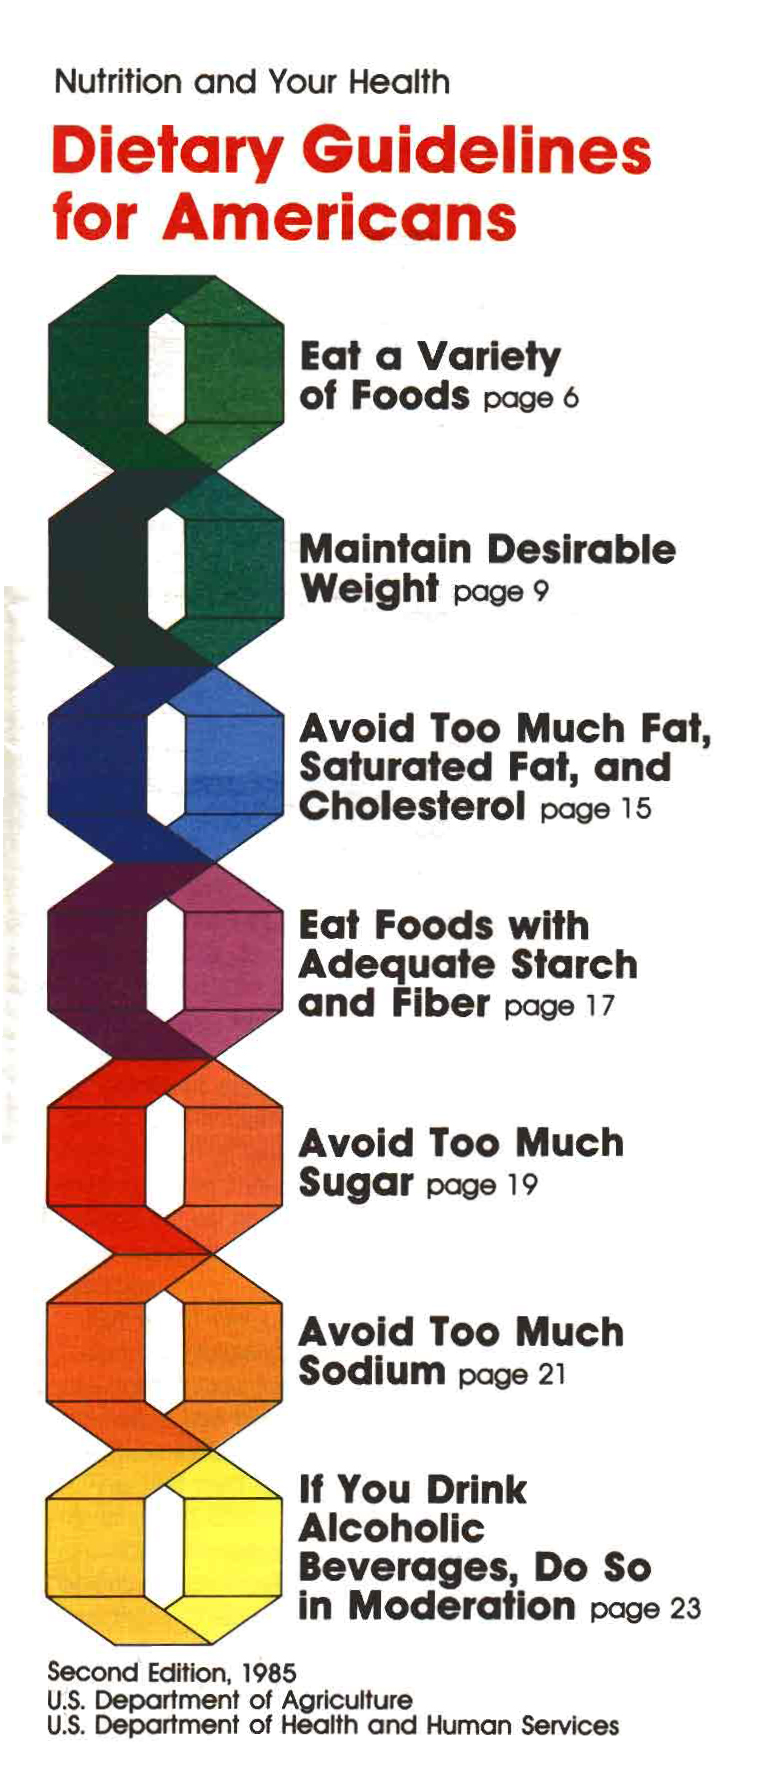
This the cover of the 1985 Dietary Guidelines for Americans produced by the Center for Nutrition Policy and Promotion Service (CNNP).